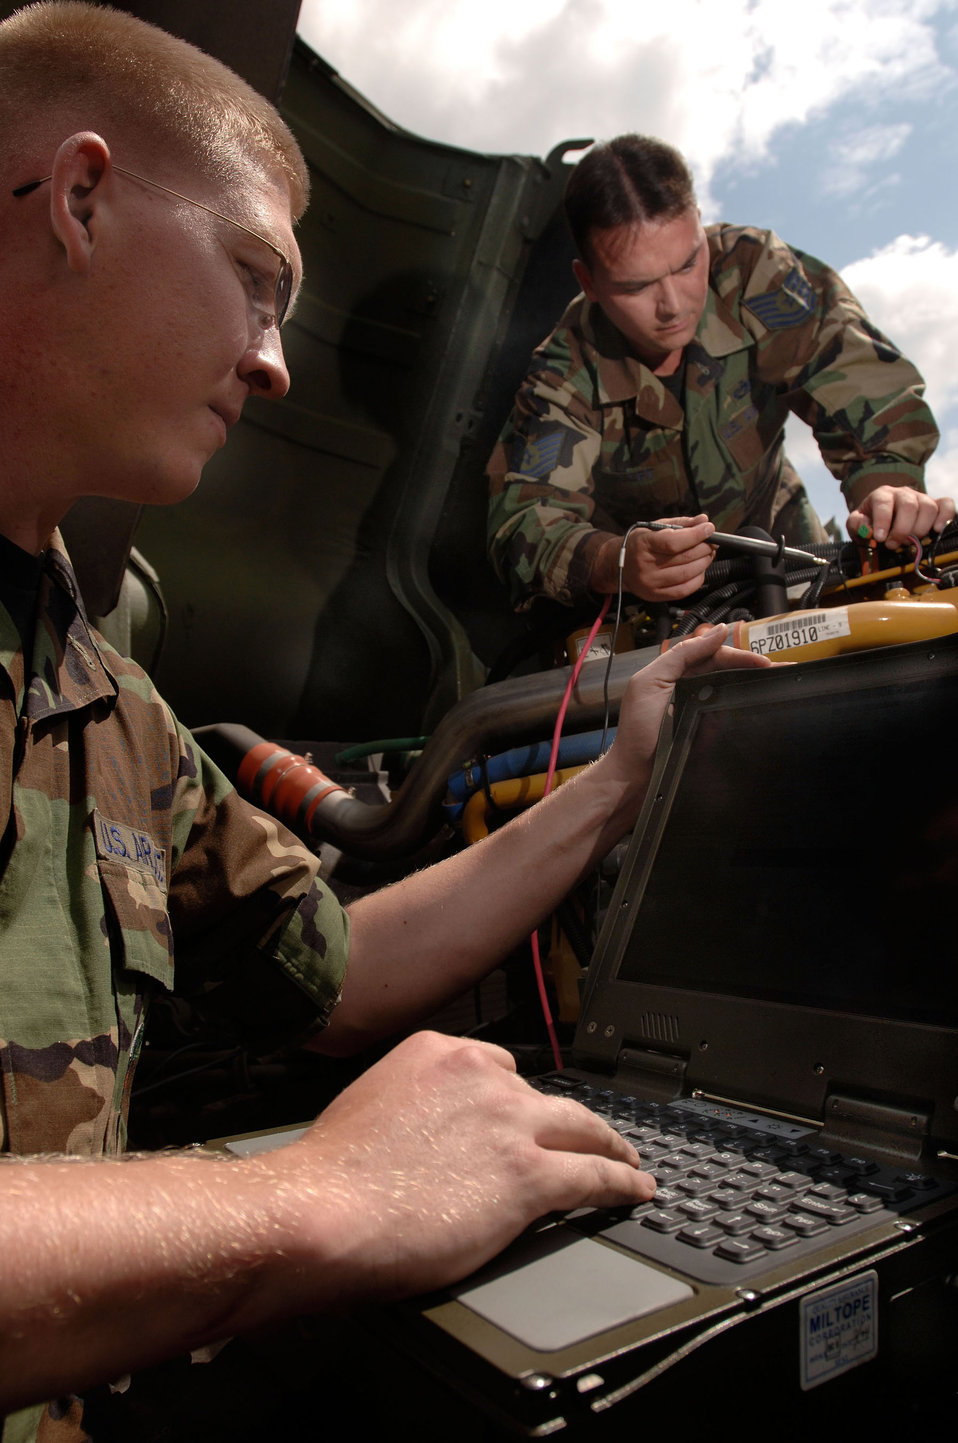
Vehicle Operations

SULLIVAN BARRACKS, Germany -- Staff Sgt. Kyle Polencheck (left) analyzes data as Tech. Sgt. Jeffery Egbert checks a faulty sensor. The information gives maintainers immediate data on engine sensors, trouble codes, drive train data, brake systems and fluid pressures on the light military tactical vehicle. The system allows operators to isolate and identify problems in 30 minutes, where before it might have taken them a full day's work. The Airmen are vehicle maintainers with the 4th Air Support Operations Squadron here.